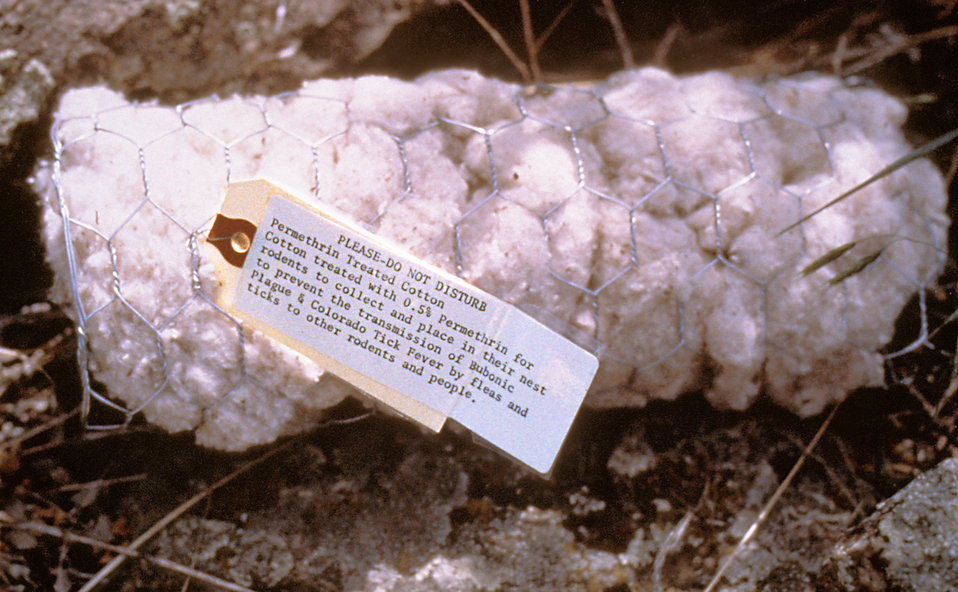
Permethrin-treated cotton is collected by rodents and brought back to their nests.